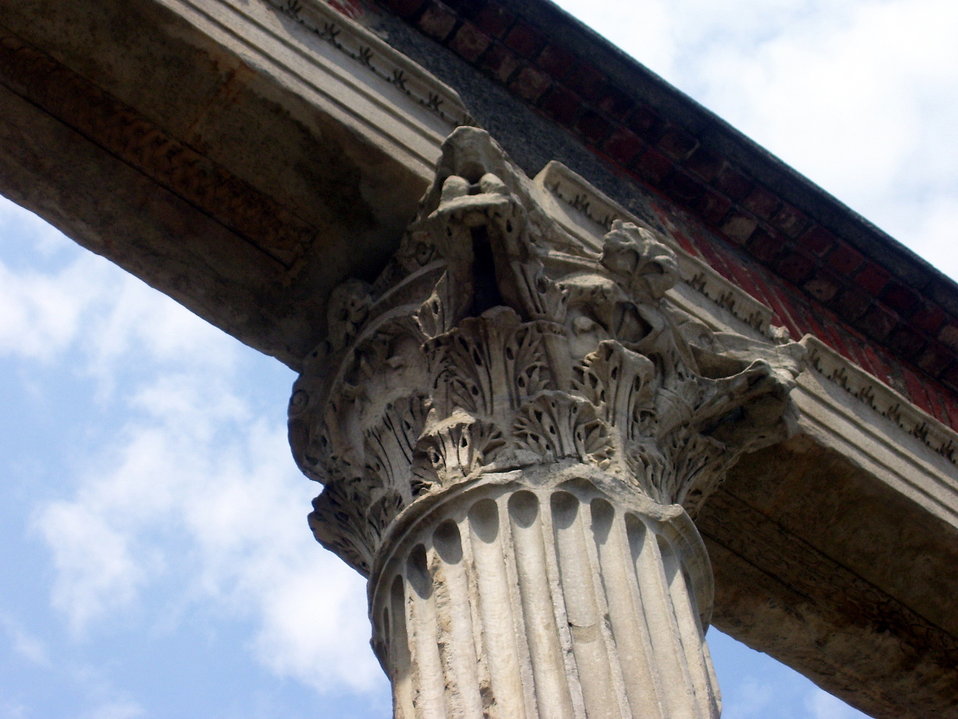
Colonne di San Lorenzo in Milan